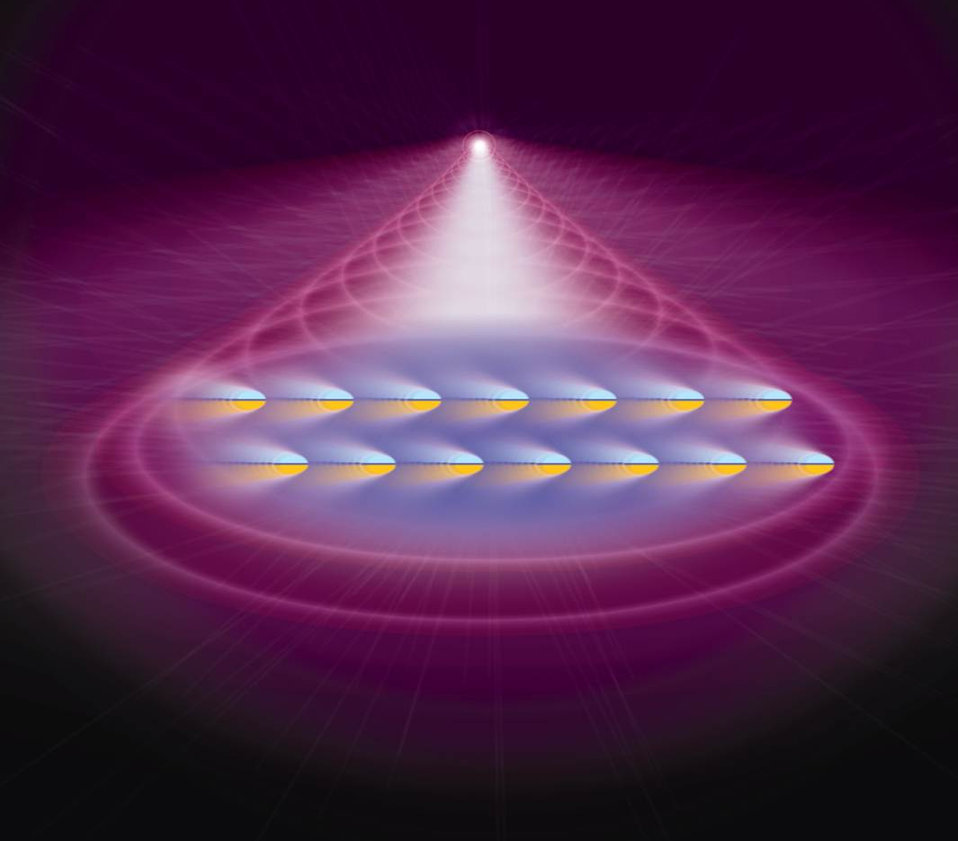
Bose-Einstein Condensate (BEC)

This artist's conception shows atoms in a Bose-Einstein Condensate (BEC) being pushed by laser light. When the atoms, which all have the same magnetic spin orientation (represented by their blue and yellow poles ), are pushed toward the viewer, they drift to the right because of their spin -- a result of the spin Hall effect, which has been observed in a BEC for the first time.